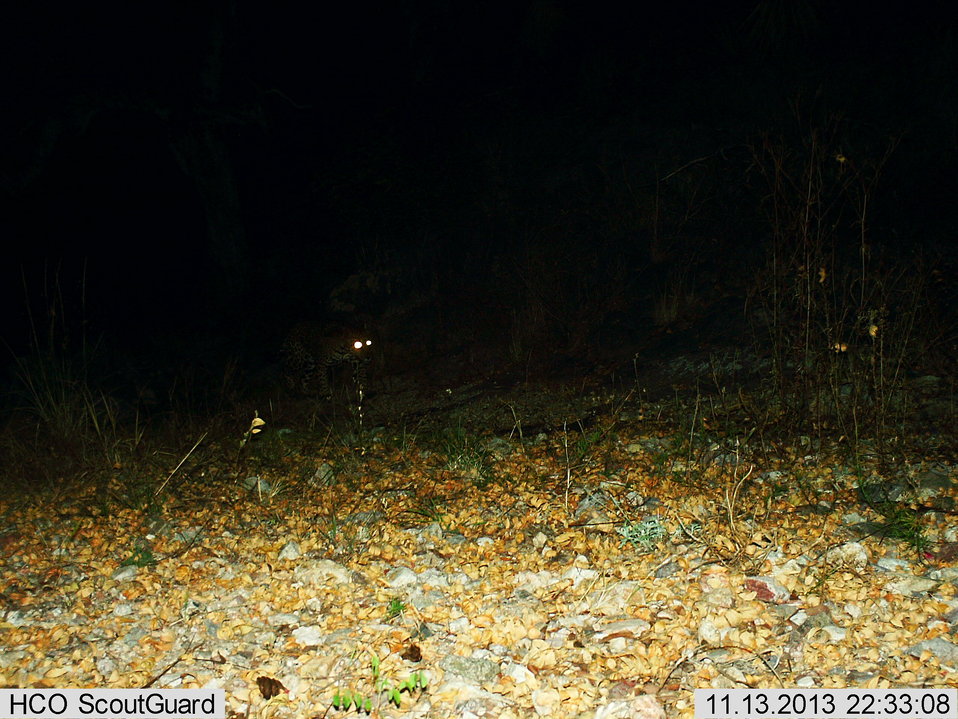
Male Jaguar UA jaguar 2013 11-13 22 33 10

[UA Jaguar 2013-11-13 (22.33).jpg] Male jaguar photographed by automatic wildlife cameras in the Santa Rita Mountains on November 13, 2013, as part of a U.S. Fish and Wildlife Service/Department of Homeland Security-funded jaguar survey conducted by University of Arizona. This photo location is new but not far from previous photo detections.